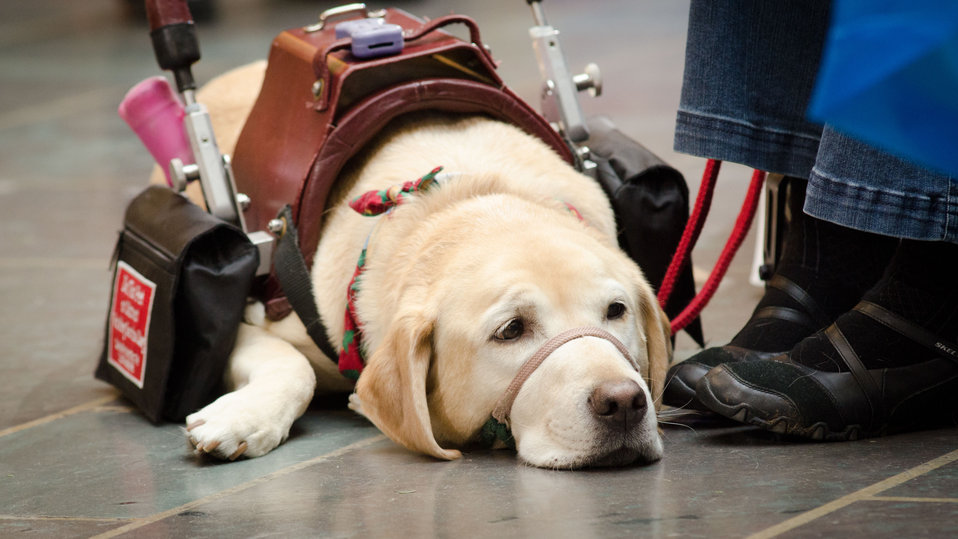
Assistance dog “Chuckwagon” takes a break next to his owner Sharon Tarlano near the Canine Partners for Life information table at the Combined Federal Campaign (CFC) fundraiser at the U.S. Department of Agriculture (USDA) headquarters, on Monday Dec. 3, 2012, in Washington, D.C. The event featured a 'Pie Smash” event where attendees, on personal time, donate money to throw non-dairy whipped 'cream' pies at Agriculture leadership. Other fund raising activities at this event included a silent auction, candy packets, bake sale, and pulled-pork sandwich lunches for donations. Additionally, information tables for Red Cross and Canine Partners for Life provided people with answers about the organizations and how to participate.